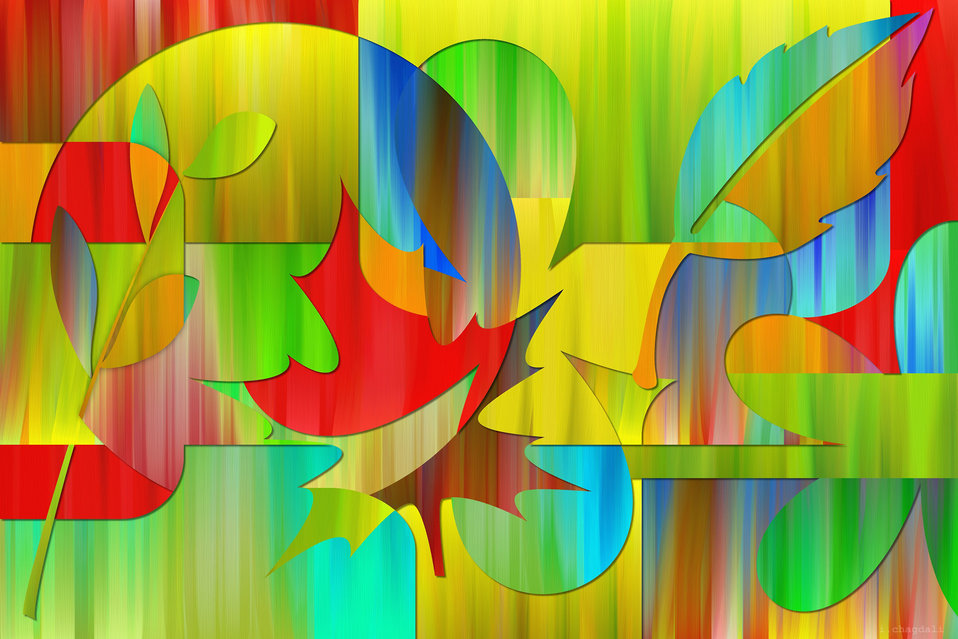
Nature plants colors

Multi colors nature.